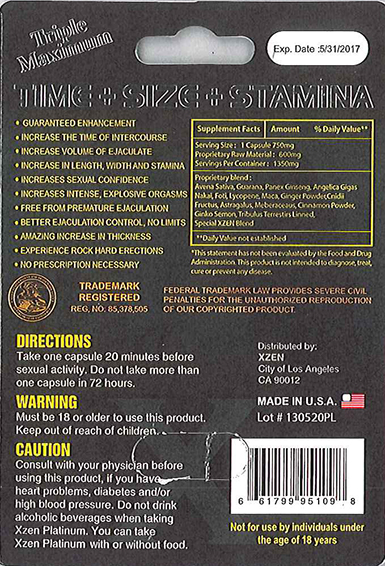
RECALLED – Dietary Supplement

April 1, 2014 – Product Recall – Nova Products, Inc. Issues Voluntary Nationwide Recall of Dietary Supplements with Undeclared Active Pharmaceutical Ingredients.